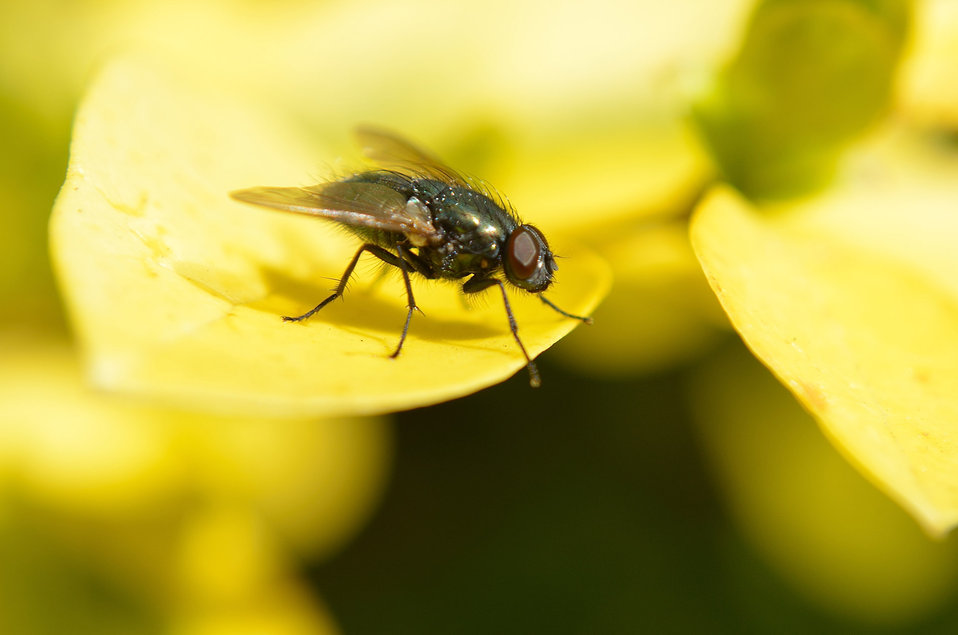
Fly on a yellow leaf.